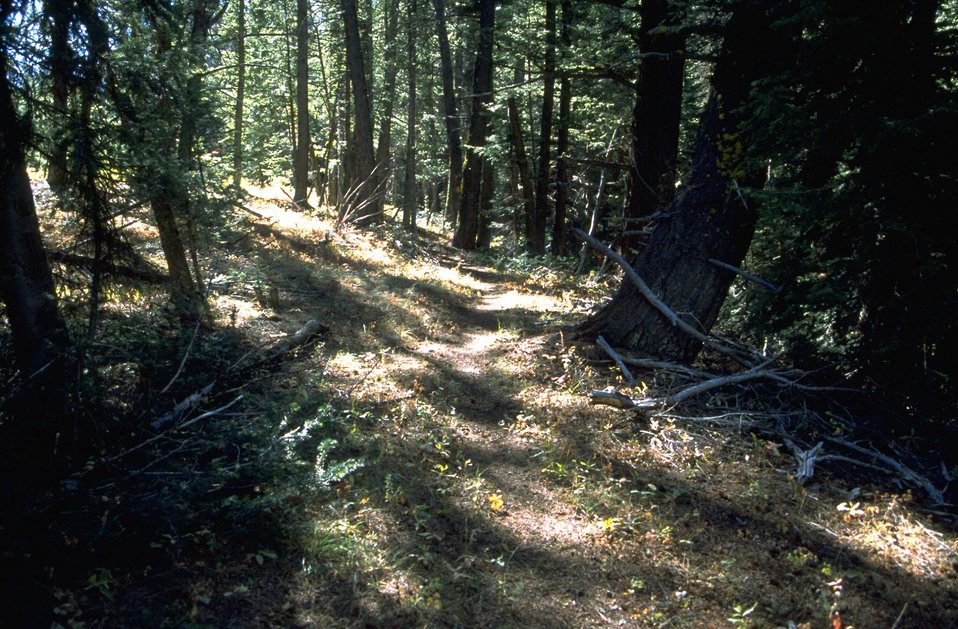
Trail in forested area